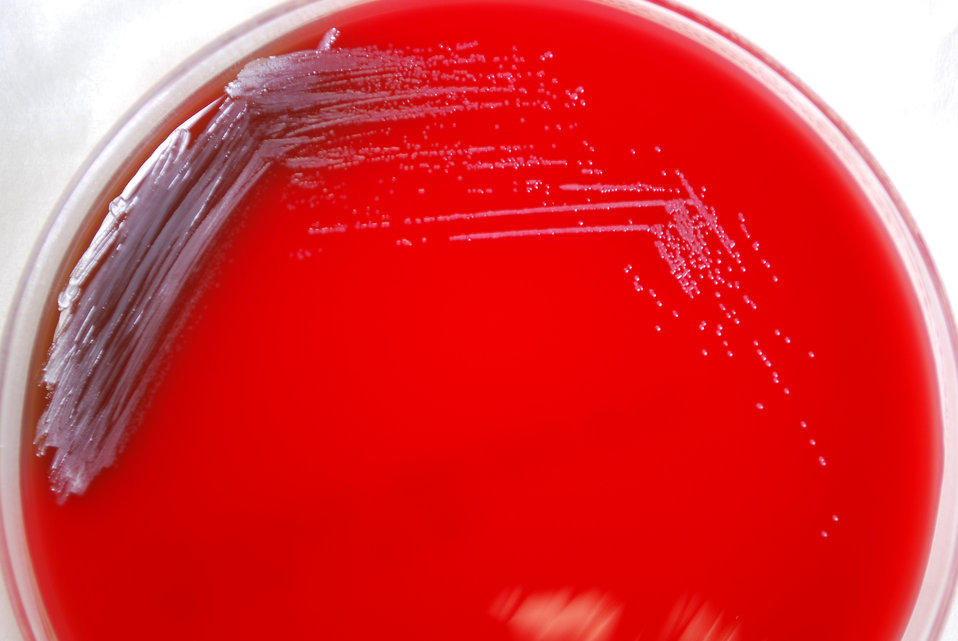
As a closer view of PHIL 12247, this photograph depicts the colonial morphology displayed by Gram-negative Burkholderia pseudomallei bacteria, which was grown on a medium of sheep's blood agar (SBA), for a 24 hour time period, at a temperature of 37�C.